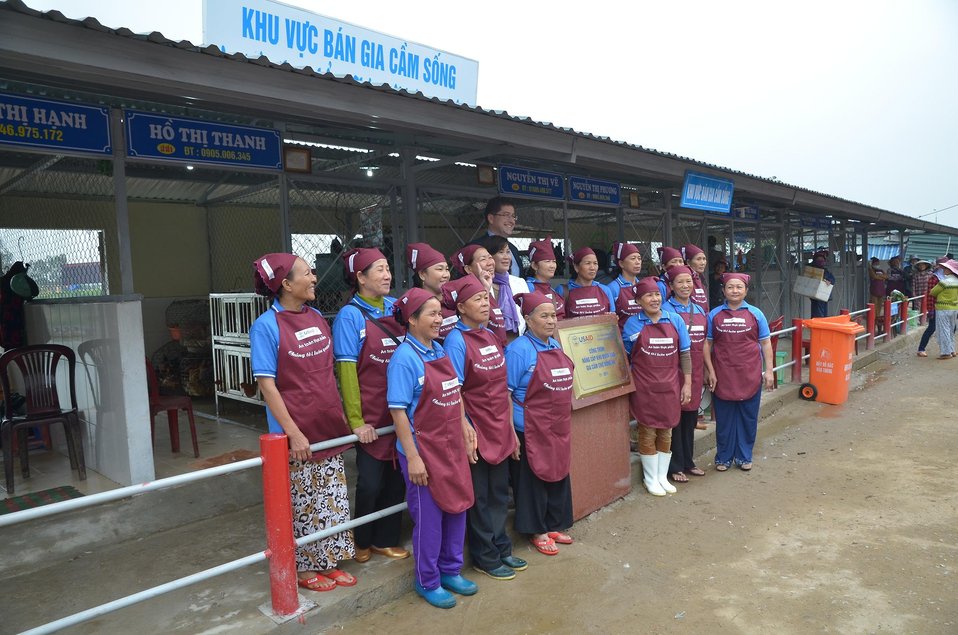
Disease Risk Reduction in Dong Ha Poultry Market, Quang Tri

Photo by Jens Peter Dalsgaard/USAID's Avian and Pandemic Influenza Initiative project team; December 5, 2011